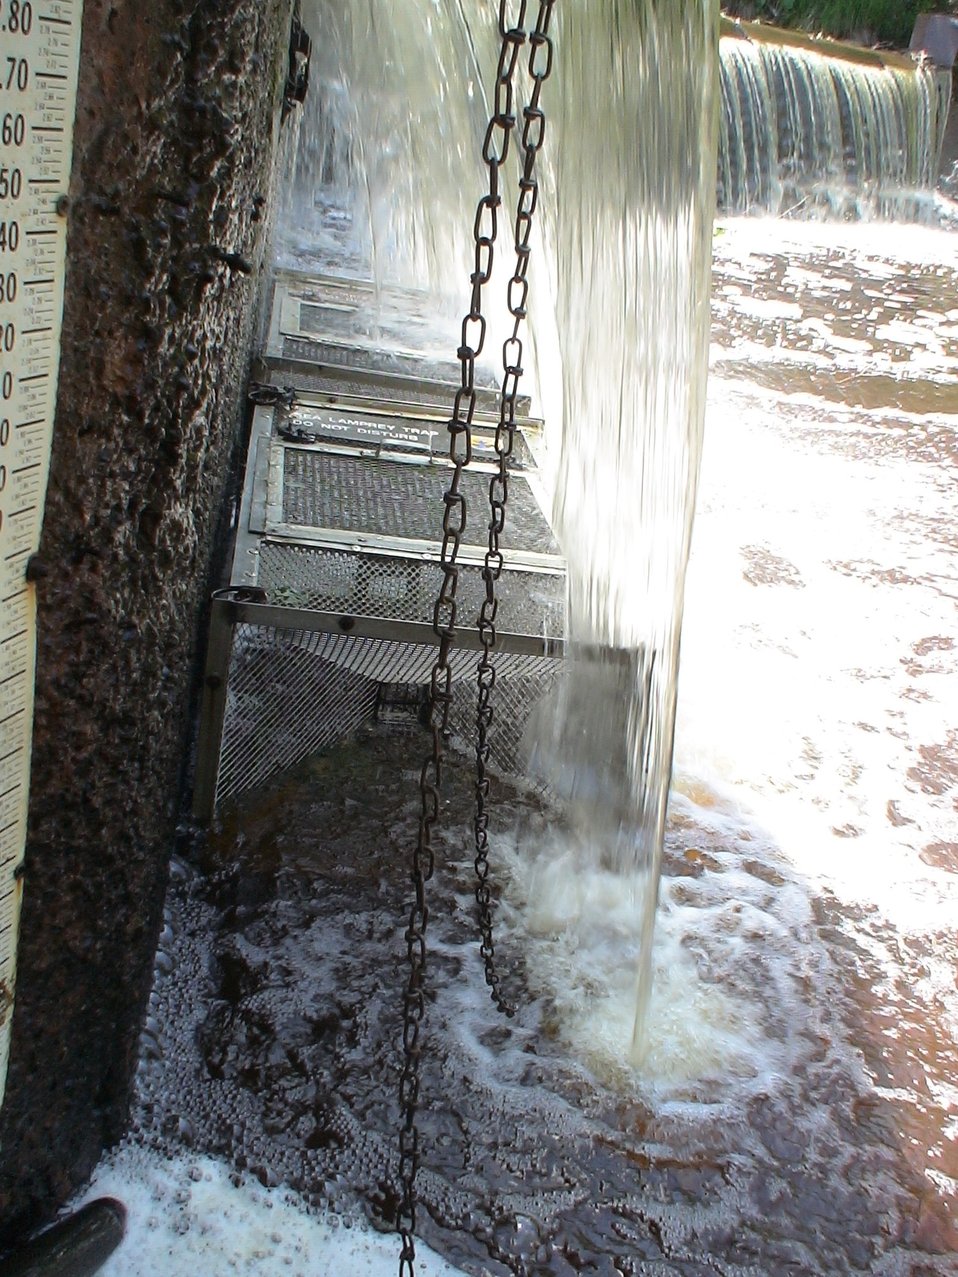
Portable Assessment Traps Fishing for Sea Lamprey.